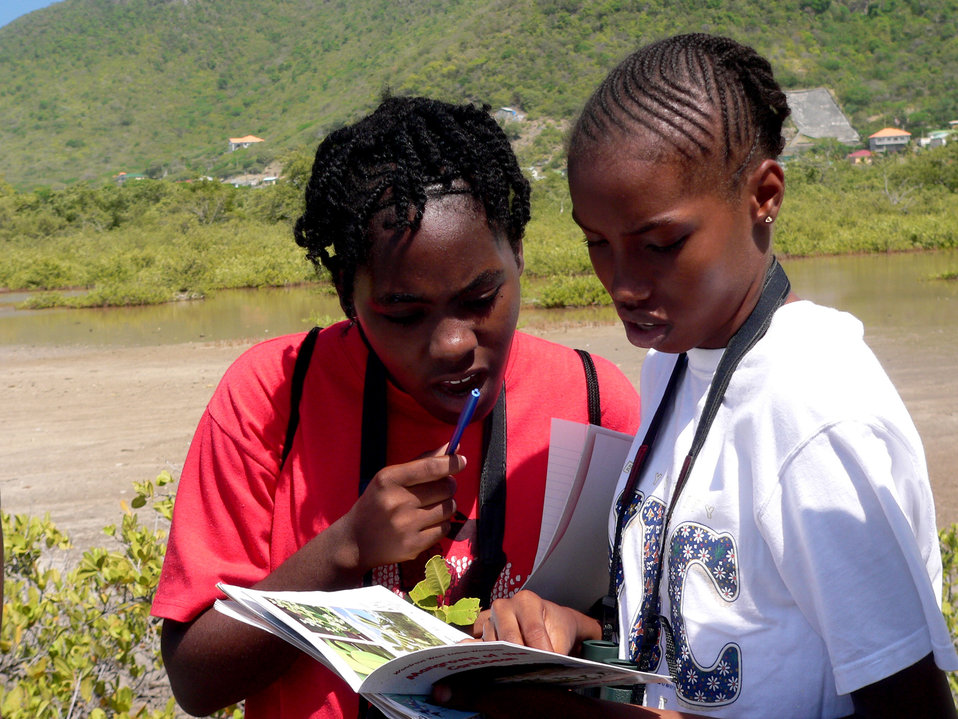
Learning about mangroves

Young conservationists study mangroves at SCSCB training.